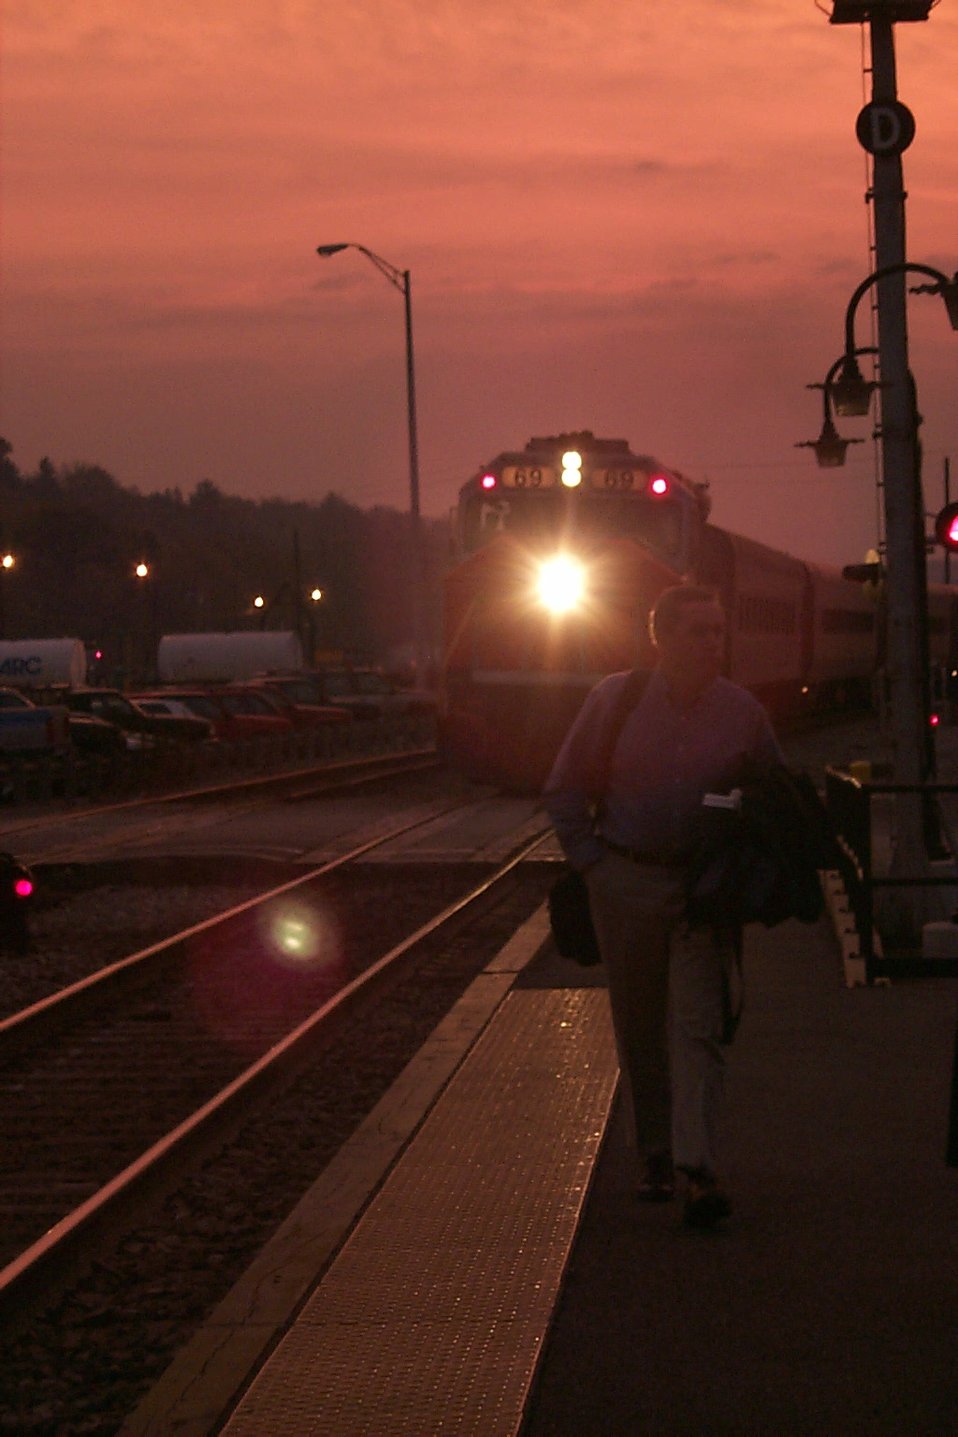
Sunrise at the MARC station at Point of Rocks.